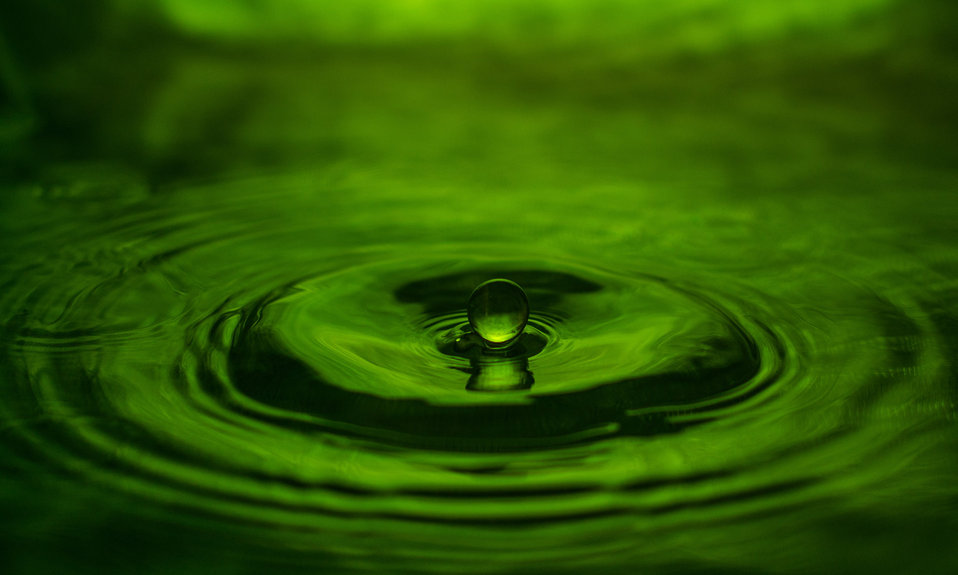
Drop

The impact of drops.